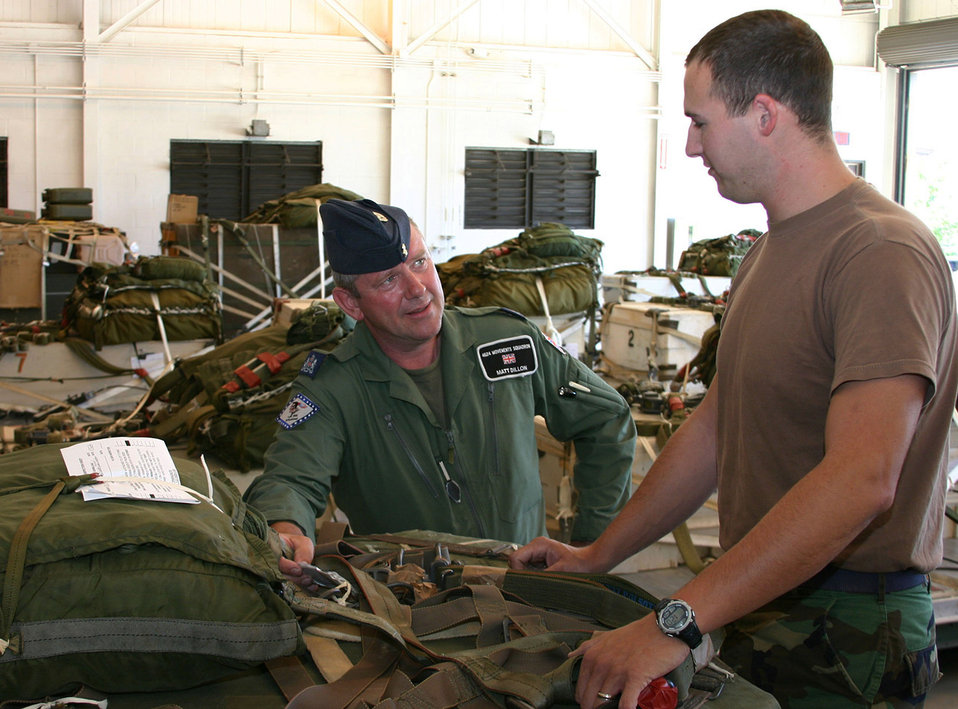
Guard, British officers exchange views

Royal Auxiliary Air Force Warrant Officer Matt Dillon talks with Staff Sgt. Kenneth Dahl, a 189th Aerial Port Flight air transportation specialist, about cargo the Arkansas Air National Guardsman helps prepare for airdrop at Little Rock Air Force Base, Ark. Warrant Officer Dillion participated in an Air National Guard and Royal Auxiliary Air Force warrant officer exchange program in September.